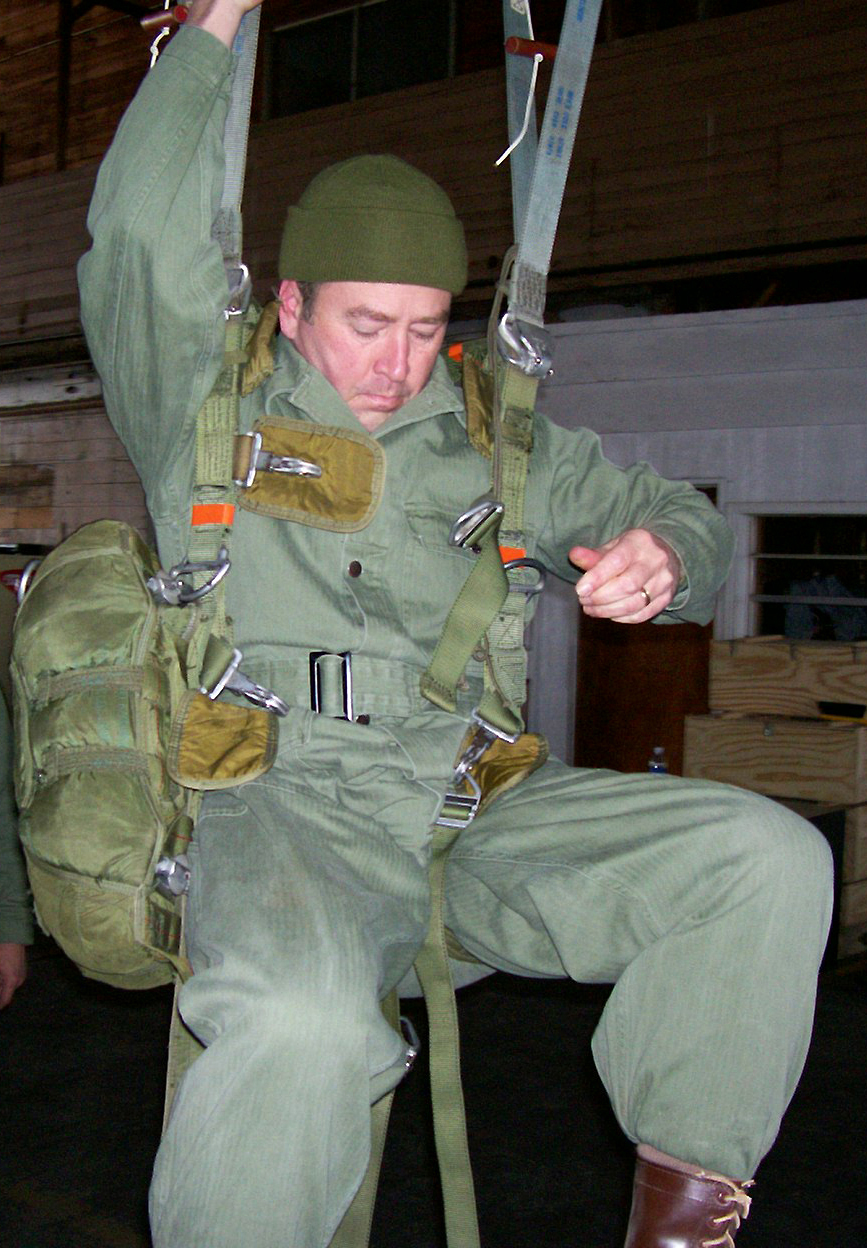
Logistics planner enjoys living in past

Lt. Col. William Jordan immerses himself into the characters of the past he portrays. He is shown here training with the World War II Airborne Demonstration Team at Frederick Army Airfield in Frederick, Okla.